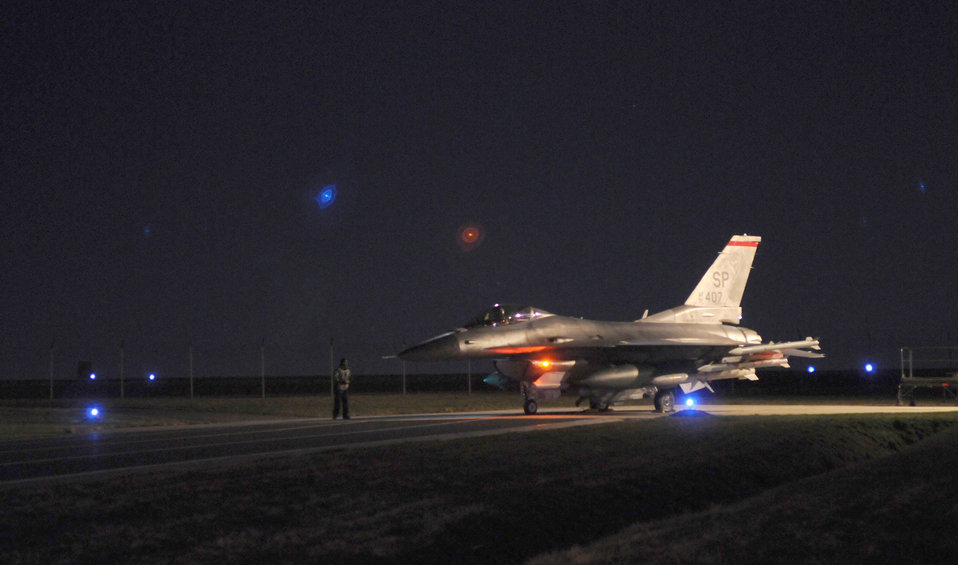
Operation Odyssey Dawn

SPANGDAHLEM AIR BASE, Germany ? An F-16 Fighting Falcon from the 480th Fighter Squadron prepares for take-off from Spangdahlem Air Base in support of Operation Odyssey Dawn March 19. Joint Task Force Odyssey Dawn is the U.S. Africa Command task force established to provide operational and tactical command and control of U.S. military forces supporting the international response to the unrest in Libya and enforcement of United Nations Security Council Resolution (UNSCR) 1973. UNSCR 1973 authorizes all necessary measures to protect civilians in Libya under threat of attack by Qadhafi regime forces. JTF Odyssey Dawn is commanded by U.S. Navy Admiral Samuel J. Locklear, III.